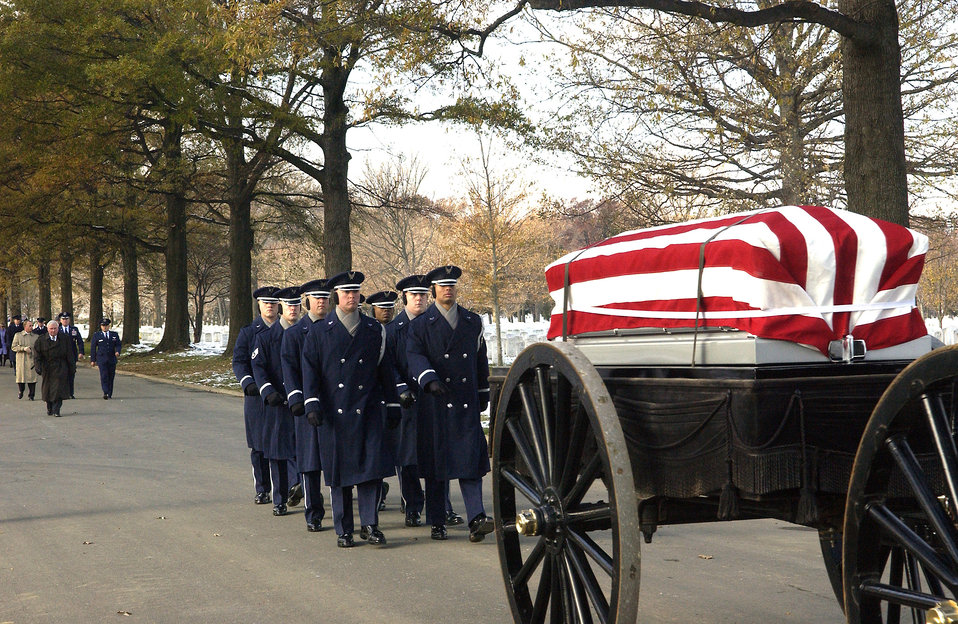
Paying your final respects

ARLINGTON NATIONAL CEMETERY, Va. (AFPN) -- U.S. Air Force Honor Guardsmen lead the caisson carrying the remains of Col. Wilfred B. Crutchfield and Lt. Col. Ivan E. O'Dell to their gravesite in Arlington National Cemetery. The remains were laid to rest with full military honors here, Dec. 7. The Airmen died in a plane crash in 1968 but their remains were not discovered until October 2004.